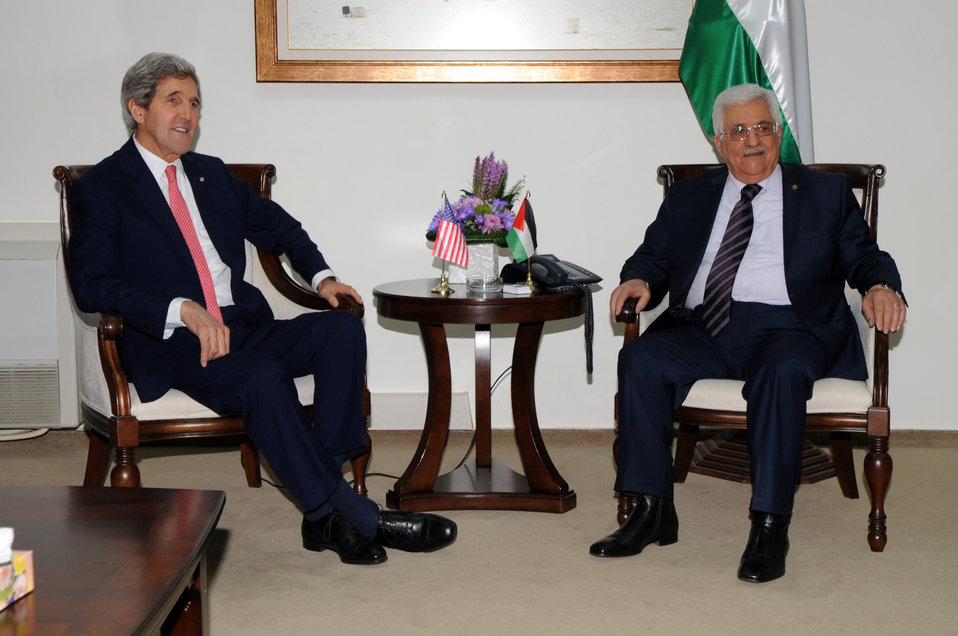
Secretary Kerry Meets With Palestinian President Abbas

U.S. Secretary of State John Kerry sits with Palestinian Authority President Mahmoud Abbas before a meeting in Ramallah, West Bank, on December 5, 2013.